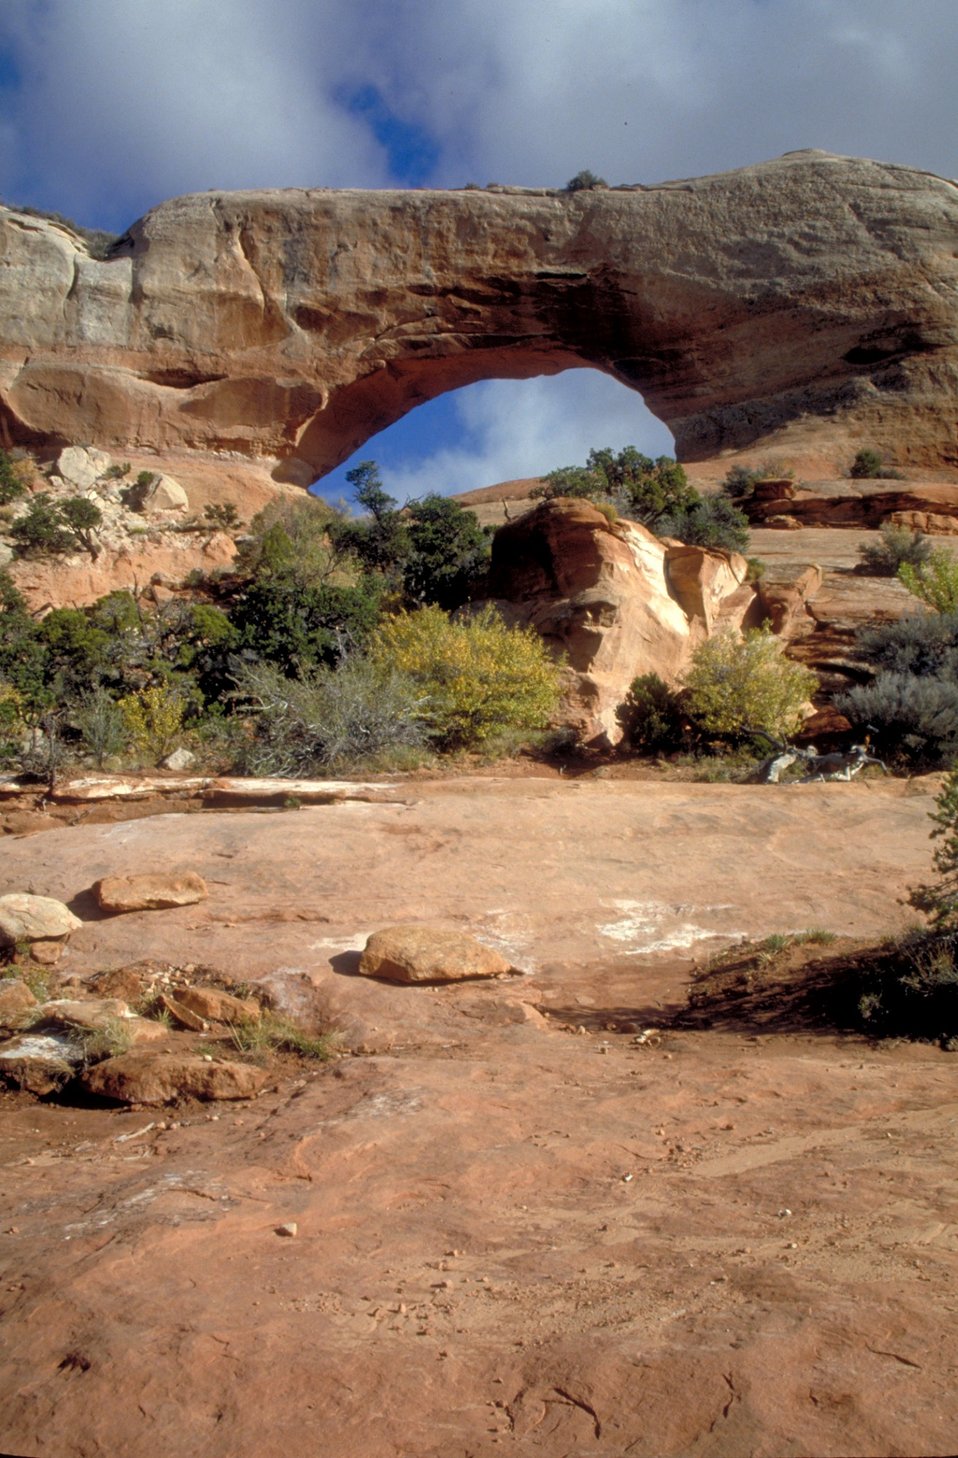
Wilson Arch south of Moab, Utah.